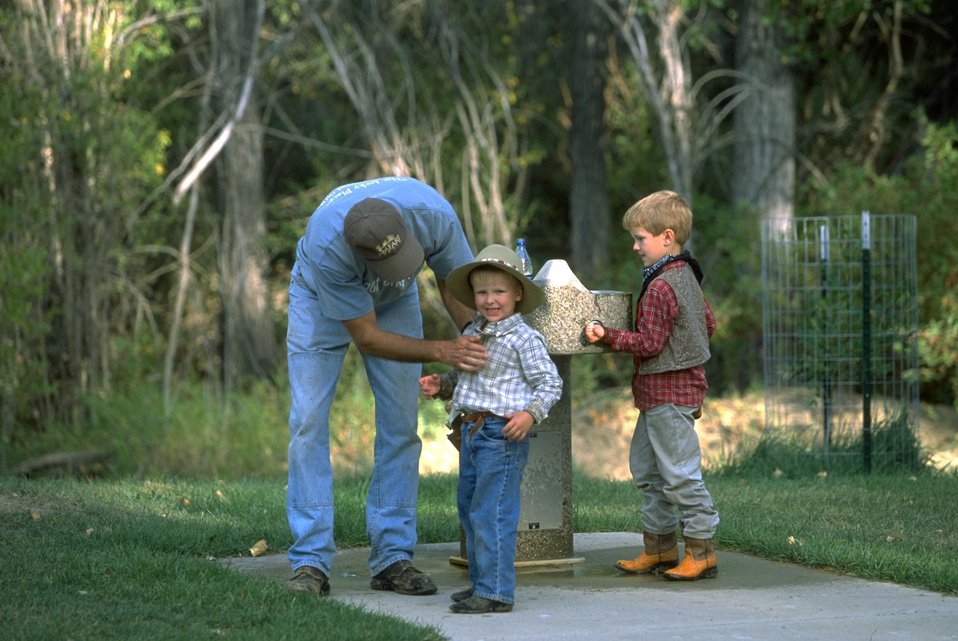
Enjoying Kipp recreation area